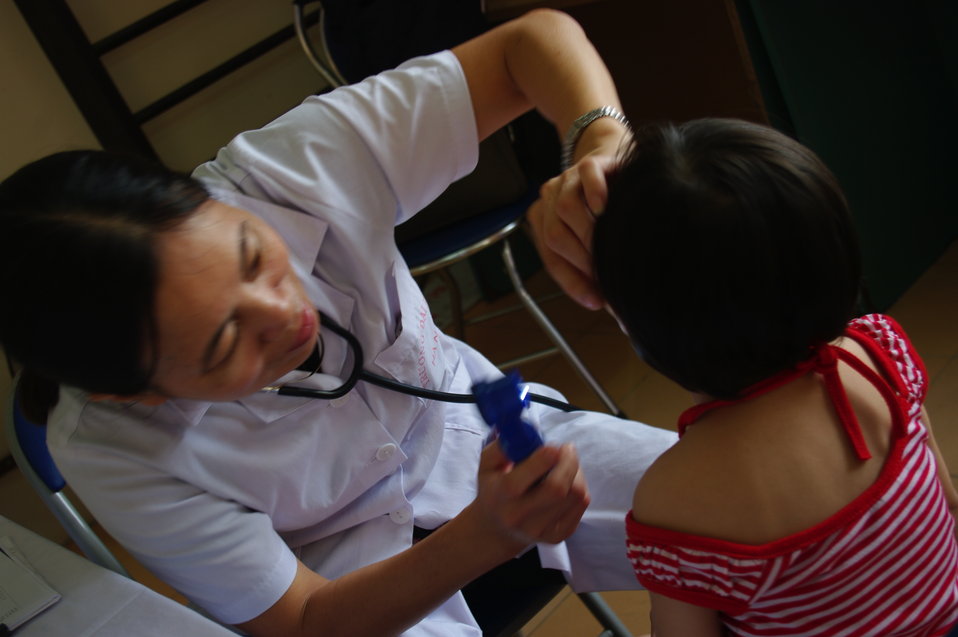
2010-09-Oprhans and vulnerable children receive free medical check-ups in Hanoi MdM DayCareRNyberg-69